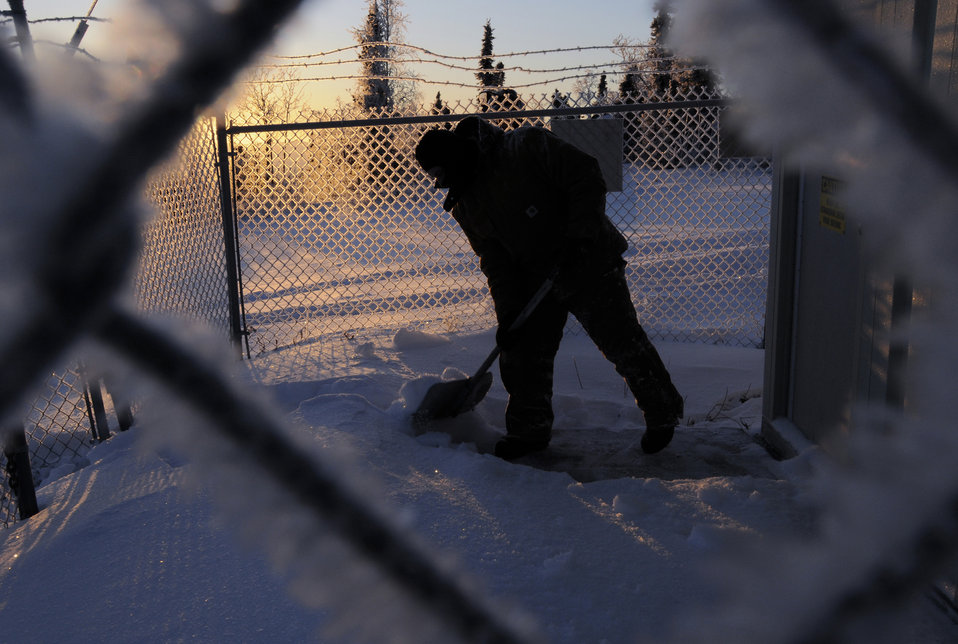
Eielson Airmen research alternative energy resources

Maj. Anthony Deluca clears a pathway to an Alaska Long Period Array site Dec. 16, 2008, at a remote operating facility in the Pacific Alaska Range Complex in Alaska. Det. 460 monitors for any underground nuclear seismic activity, atmospheric nuclear radiation and collects ground samples for analysis. Major Deluca is the Det. 460 commander.